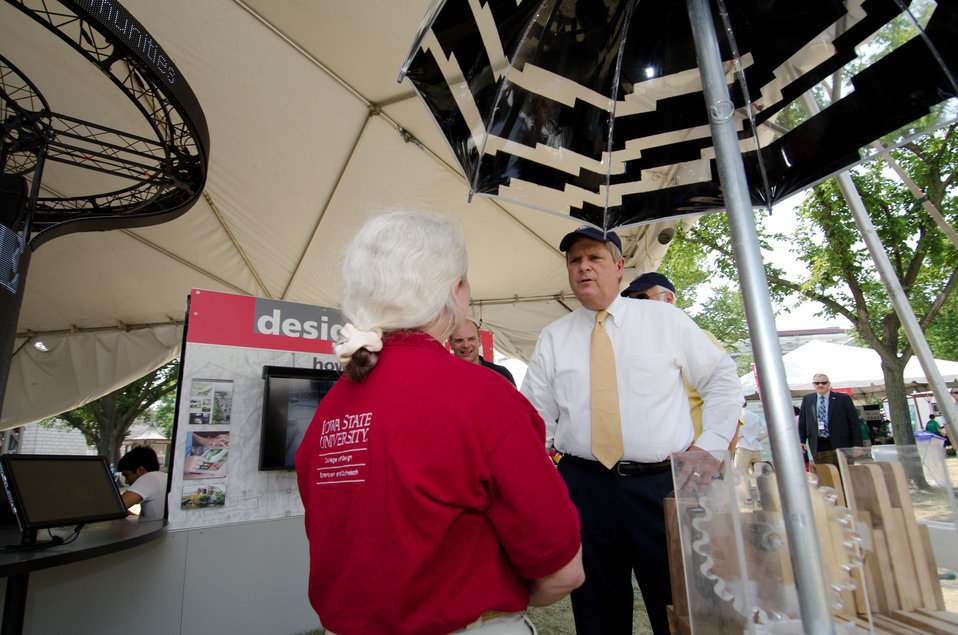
Agriculture Secretary Tom Vilsack stops in at the Iowa State University exhibition tent at the 2012 Smithsonian Folklife Festival, on the National Mall in Washington, D.C., on Friday, June 29, 2012. The University says, “Iowa State’s folklife festival exhibit highlights the central role of design in the land-grant mission, and extension’s past, present and future impact on communities. It demonstrates a unique partnership between the College of Design and Extension and Outreach in applying creative problem solving to society’s complex challenges.' Their exhibition, “Transforming Communities: Design in Action,” is inspired by Abraham Lincoln’s 1862 national call to “think anew and act anew” to solve the monumental challenges of the era that spawned the Morrill Act. It features examples of the university's completed and ongoing projects in Iowa communities, touch screen workstations with games for children and adults, and interactive activities with Iowa State faculty and staff.” One of the three themes this year is “Campus and Community.” It celebrates the 150 years of the USDA and the Land-Grant University System. The U.S. Department of Agriculture (USDA) and the Land-Grant system extend education across the country, contributing to American agriculture success and rural prosperity. “Campus and Community” has demonstrations, discussions, hands-on activities, and entertainment to that showcase the many ways that this partnership works to improve American agriculture and rural life.